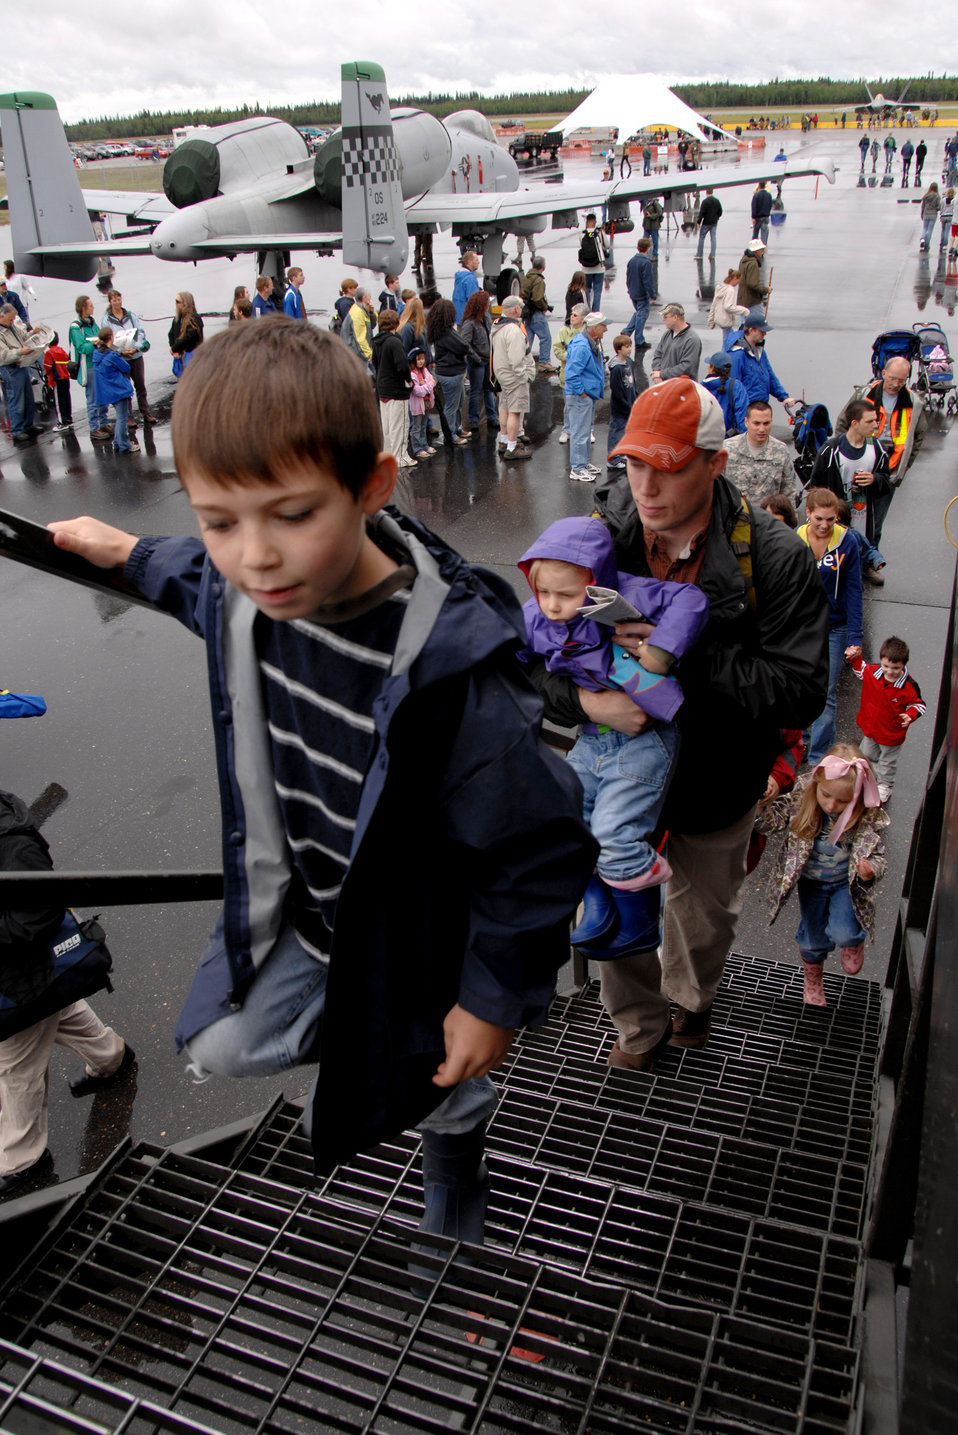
Thunderbirds 'Soar into Solstice' at Eielson

Ian Roberts boards a KC-135 Stratotanker during the June 24 airshow at Eielson Air Force Base, Alaska. The Eielson AFB airshow allowed the citizens of the surrounding towns to get an up close view and demonstration of the capabilities of the Air Force's aircraft. Ian is from North Pole, Alaska.